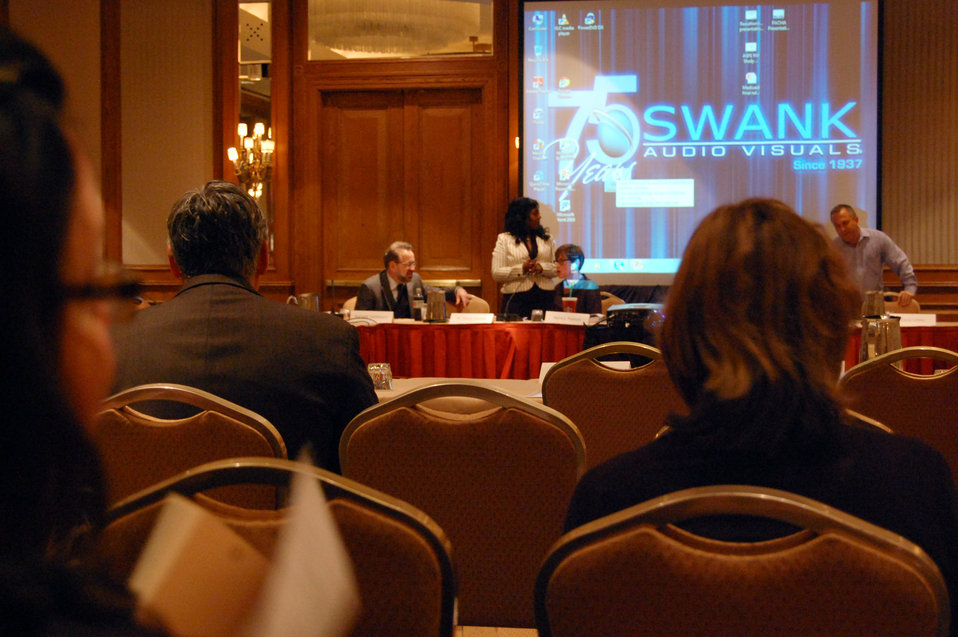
PACHA conf031